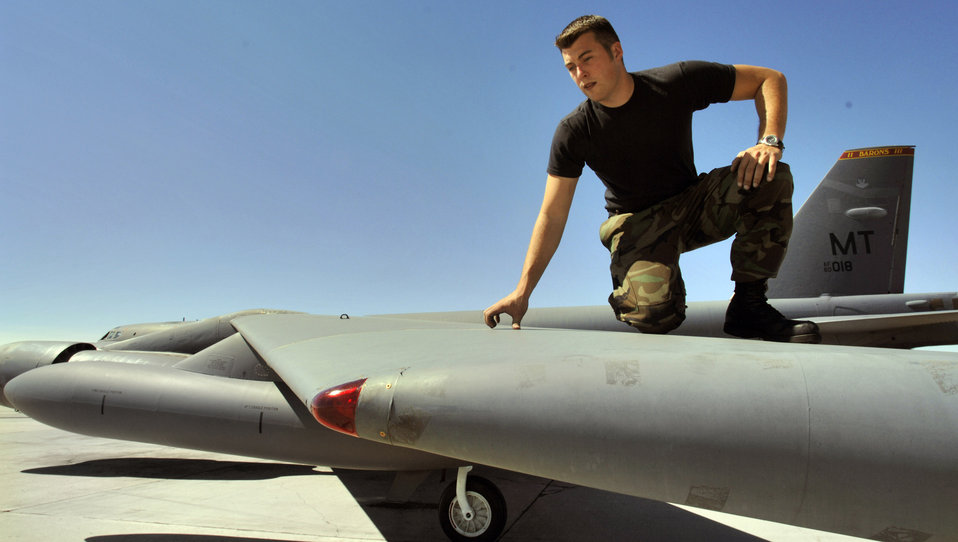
B-52 Stratofortress ages like wine

Staff Sgt. Kory McLeod inspects the wing tip of a B-52 Stratofortress at Minot Air Force Base, N.D., Aug. 22. The wings are more than 90 feet long and designed to bend with the weight of fuel and weapons. While on the ground, a wingtip wheel gear bears the weight. Sergeant McLeod, from Manchester, N.H., is a crew chief with the 5th Aircraft Maintenance Squadron.